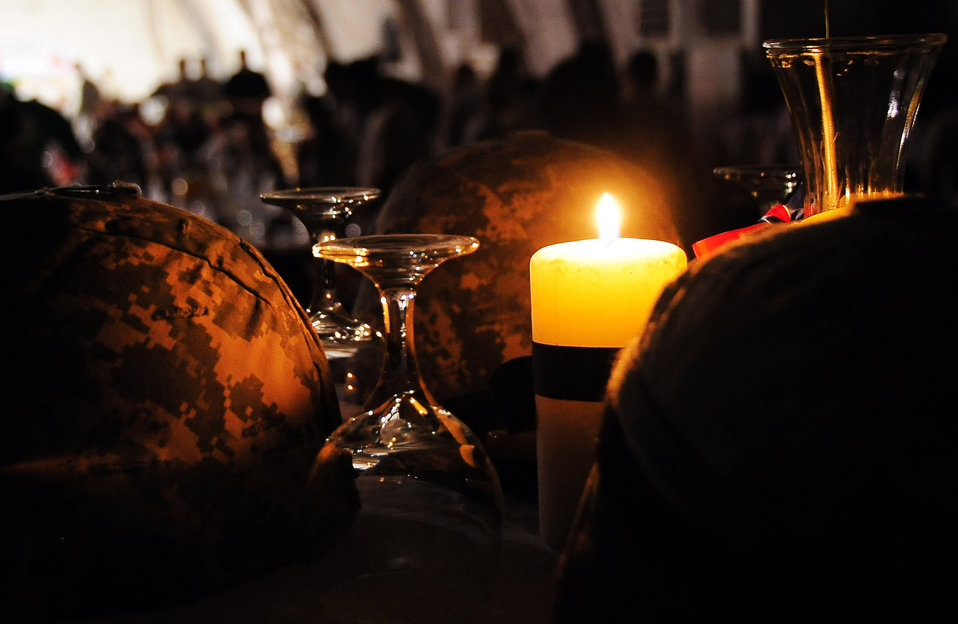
In tribute to the missing

The Prisoner of War/Missing in Action table at the 407th Air Expeditionary Group combat dining-in stands silent as a tribute to missing servicemembers April 11 at Ali Base, Iraq. The dining-in is a long-standing military tradition.